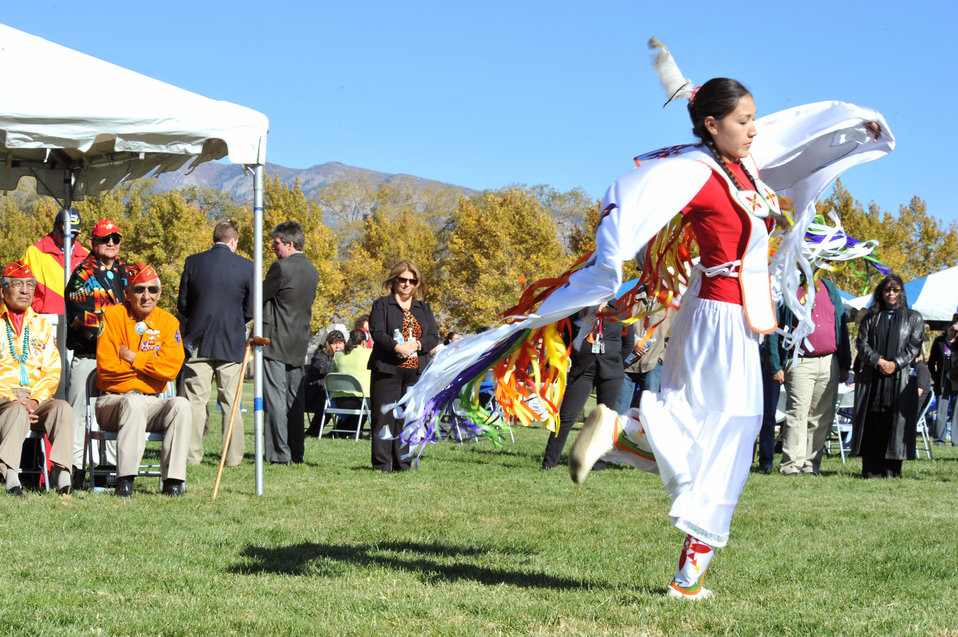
Code talkers

Alilee Bah Church, performs a traditional Native American butterfly dance during a ceremony Nov. 10, 2010, at Kirtland Air Force Base, N.M., honoring veterans and celebrating Native American Heritage Month.